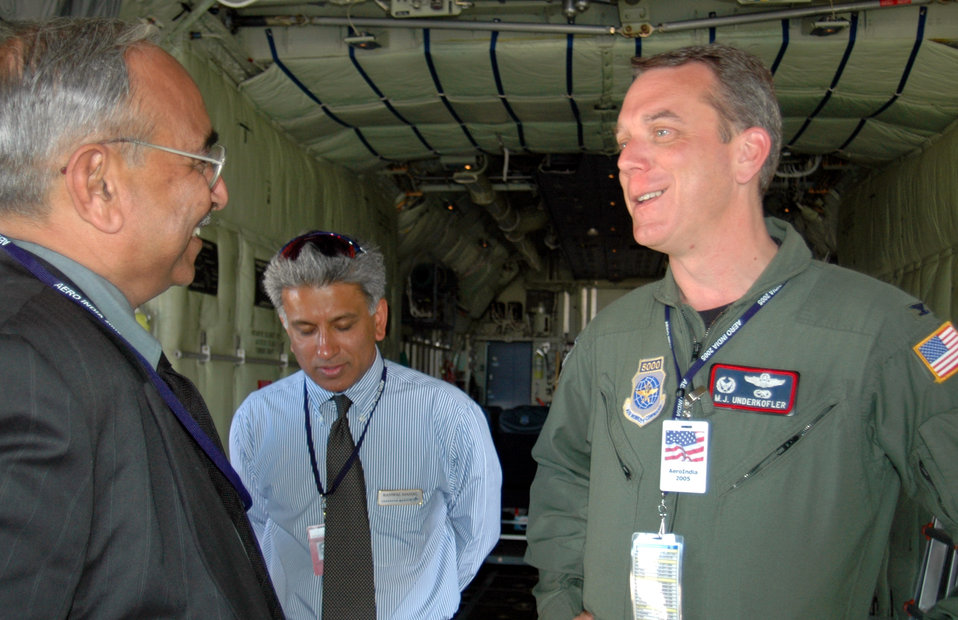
Reservists shine at Aero India

BANGALORE, India -- Col. Michael Underkofler (right) leads the tour of a C-130J Hercules during the Aero India International Air Show here Feb. 9. The display included Navy P-3C Orions, KC-135 Stratotankers and F-15 Eagles. Colonel Underkofler is the commander of the 403rd Operations Group.